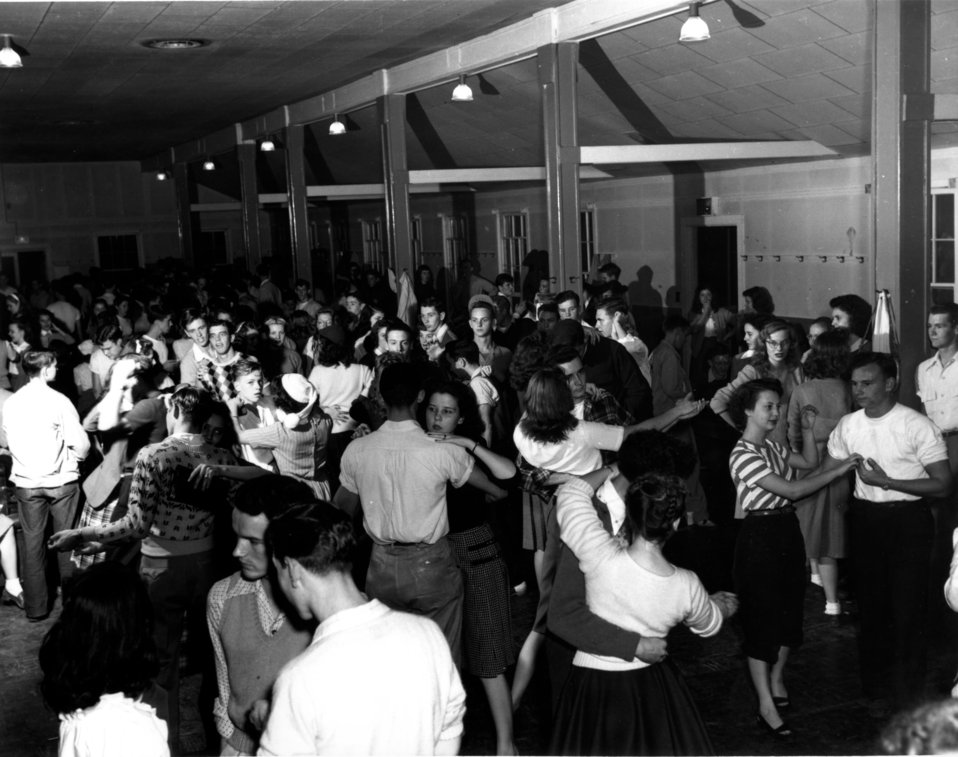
Recreation at Oak Ridge